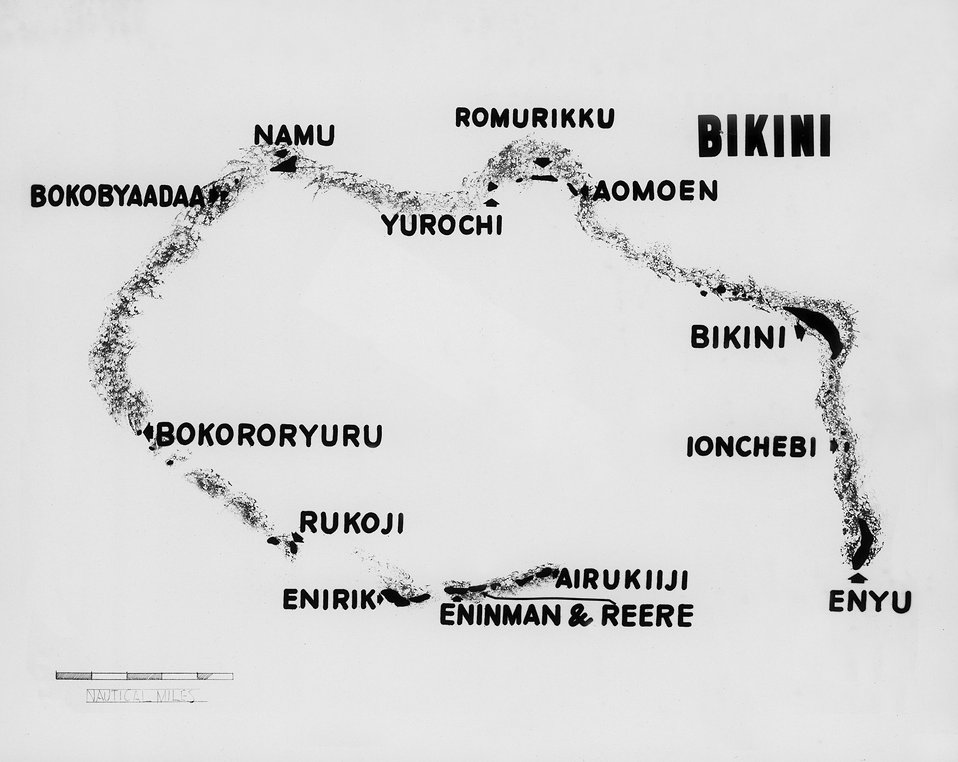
Map of Bikini Islands